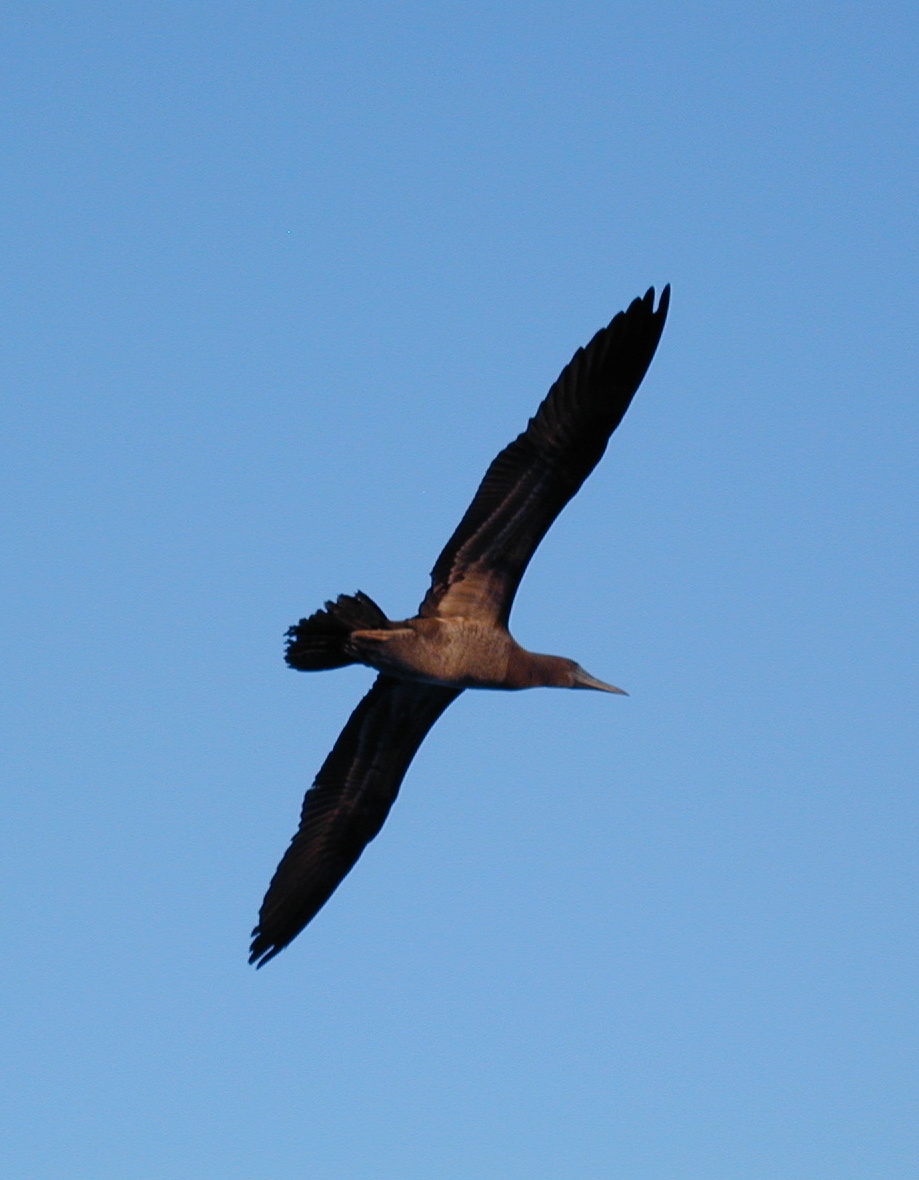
Boobie in flight.